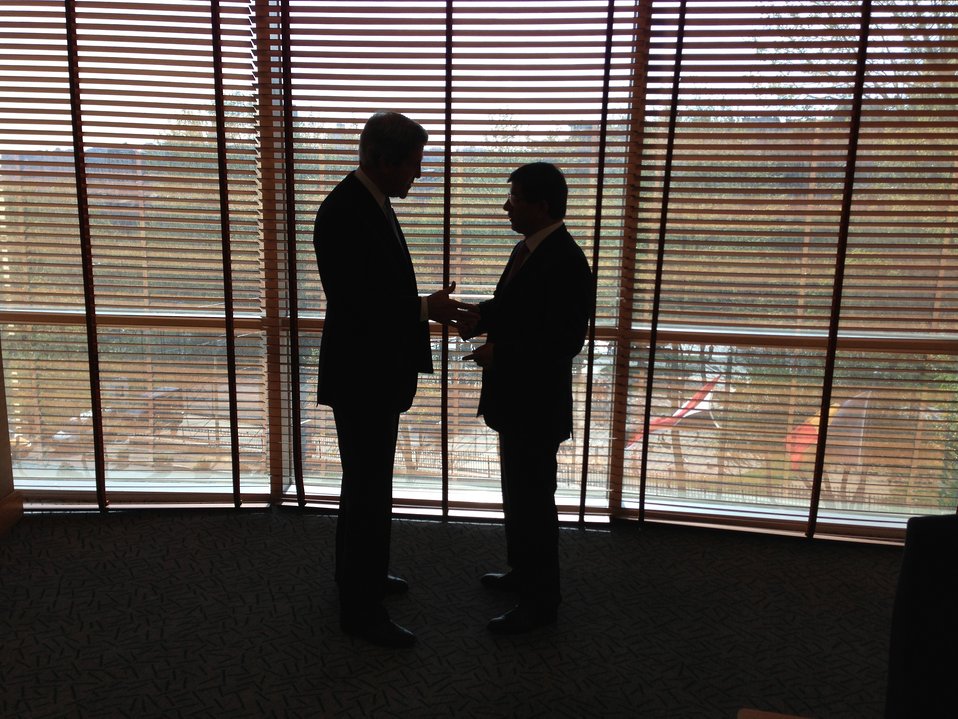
Secretary Kerry Meets With Turkish Foreign Minister Davutoglu

U.S. Secretary of State John Kerry meets with Turkish Foreign Minister Ahmet Davutoglu in Istanbul, Turkey on April 20, 2013.